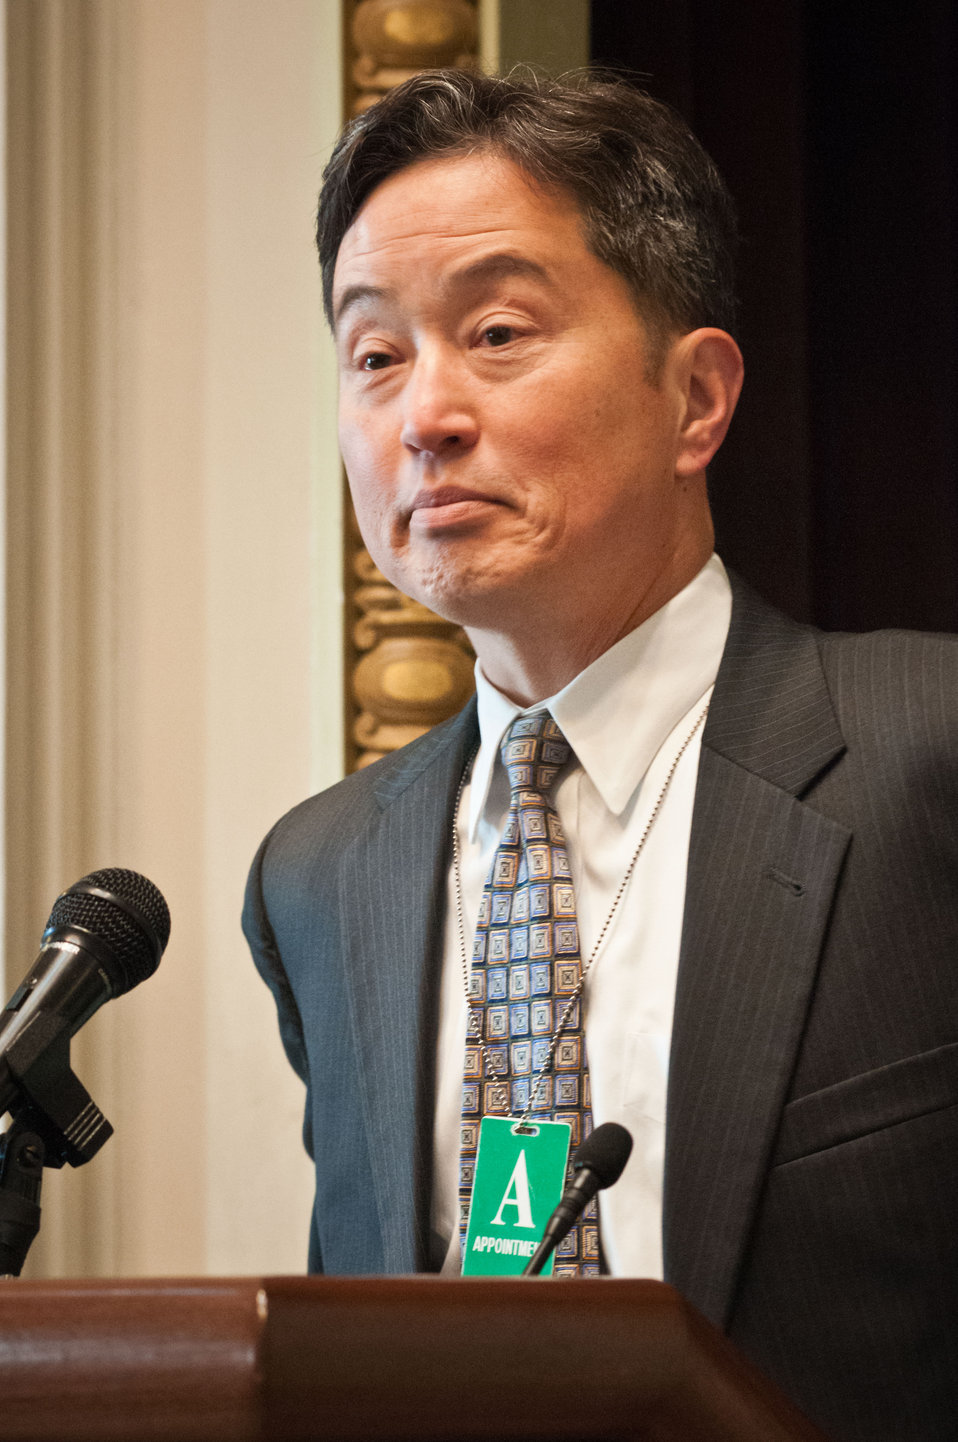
Deputy Under Secretary Food Safety Brian Ronholm spoke about food safety at the Spring National Association of Farm Broadcasters (NAFB), “Washington Watch” member retreat in Washington, D.C. This year the meeting was held in the Eisenhower Executive Office Building, Indian Treaty Room on Tuesday, April 24, 2012, featuring United Sates Department of Agriculture and Obama Administration officials. This opportunity provides an occasion to highlight efforts to rebuild and revitalize rural America, including efforts for the agricultural community. NAFB is the recognized and trusted source of agricultural and rural lifestyle information for America with approximately 200 members who broadcast via radio in nearly every state in the country.